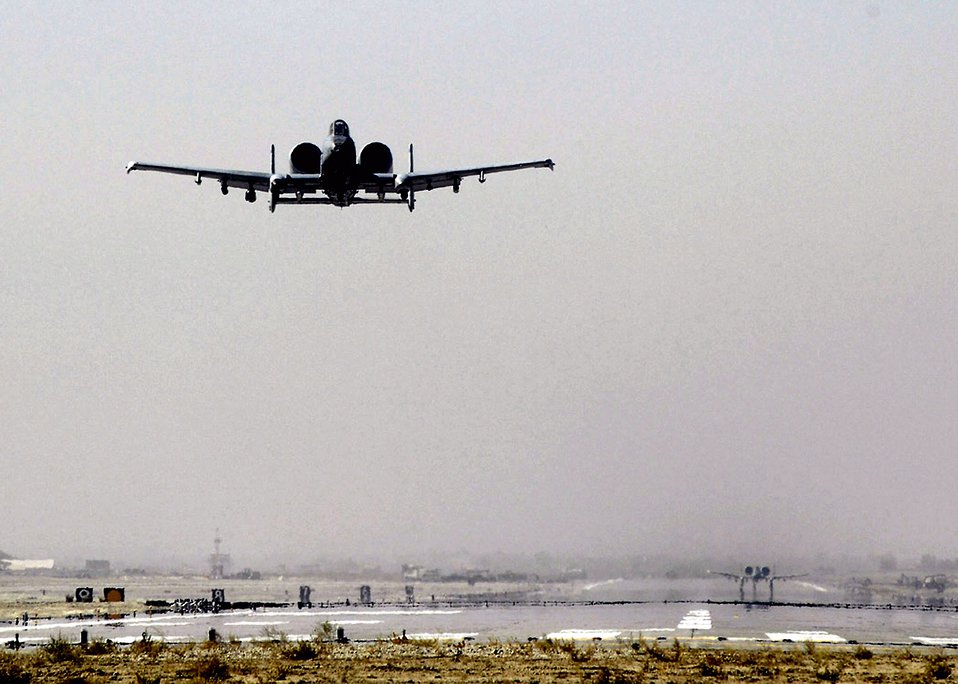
May 26 Airpower summary: A-10s bomb targets

An A-10 Thunderbolt II takes off from Bagram Air Base, Afghanistan, to fly a combat sortie in support of Operation Enduring Freedom. The A-10 has excellent maneuverability at low air speeds and altitude, and is a highly accurate weapons-delivery aircraft.